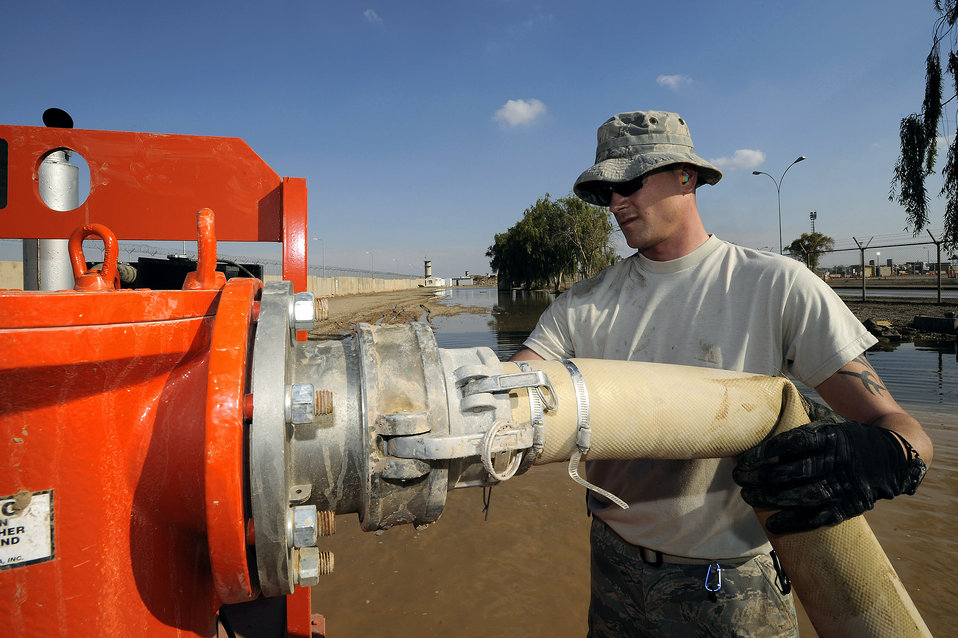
Did someone call a plumber?

Tech. Sgt. Eric Miner connects a hose to a pump while draining floodwater Nov. 3 at Joint Base Balad, Iraq. The floodwater prevented maintenance technicians from accessing a radio tower, so it was pumped into an unused yard. Sergeant Miner, a utilities systems craftsman with the 332nd Expeditionary Civil Engineer Squadron, is deployed from McConnell Air Force Base, Kan. His hometown is Concord, N.H.